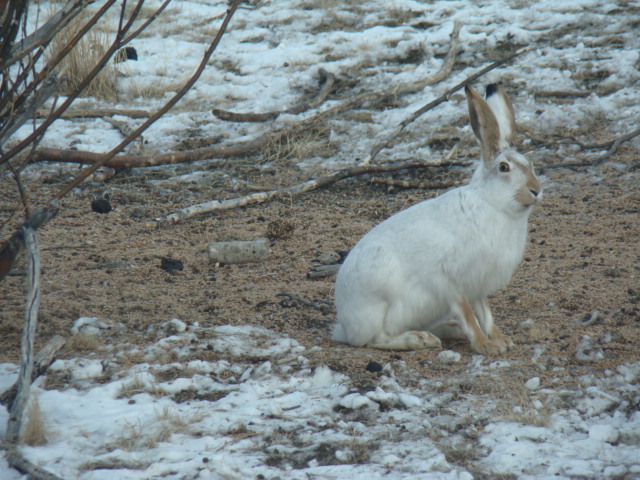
White-tailed Jack Rabbit

White-tailed Jack rabbits are common sights around the Refuge. I'm guessing this one wishes there was a bit more snow on the ground to blend into!